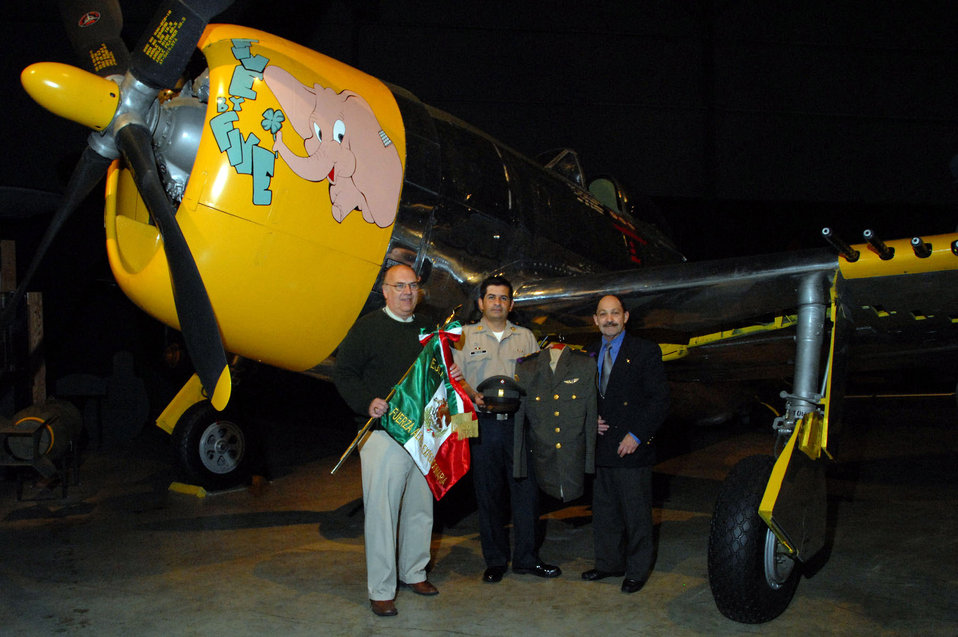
Museum receives artifact donation from Mexican air force

Terry Aitken (left to right), Mexican air force Lt. Col. Daniel Mojica and retired U.S. Air Force Col. Rafael Ramos stand in front of the museum's P-47, the same type of aircraft Mexican Fighter Squadron 201 flew during World War II, while holding some of the items that were donated during a ceremony April 29 at the National Museum of the U.S. Air Force in Dayton, Ohio. Mr. Aitken is the senior curator for the museum.